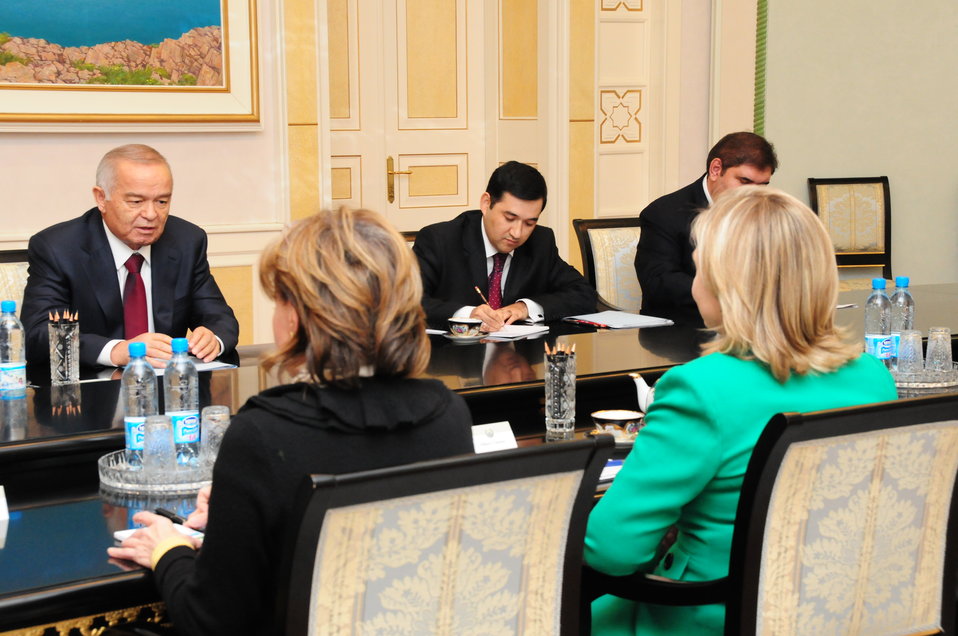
Secretary Clinton Meets With Uzbekistan's President Karimov

U.S. Secretary of State Hillary Rodham Clinton meets with Uzbekistan’s President Islam Karimov in Tashkent, Uzbekistan, on December 2, 2010.